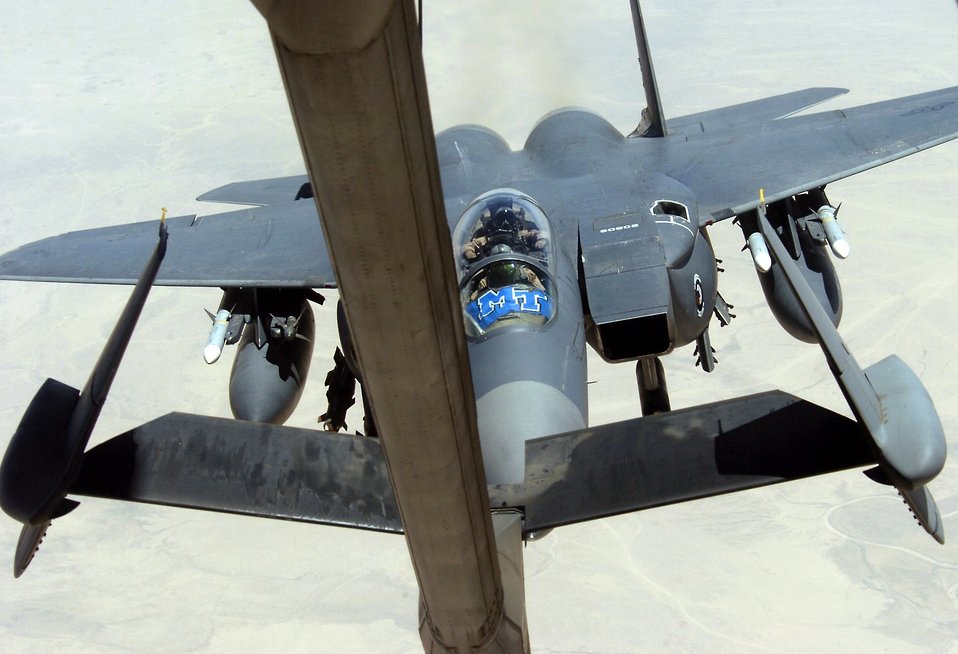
Two refuelers, one squadron can handle any situation

An F-15E Strike Eagle pulls up to the refueling boom of a KC-10 Extender while flying a close-air-support mission in support of Operation Iraqi Freedom on July 18. The KC-10 is with the 908th Expeditionary Air Refueling Squadron in Southwest Asia.